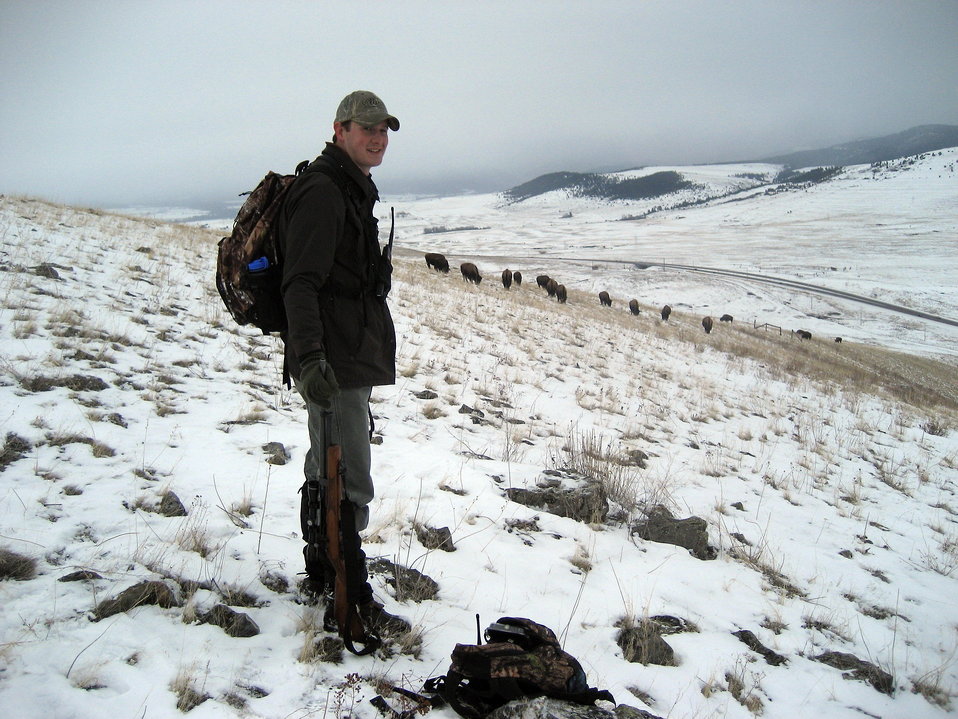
Bison Reproductive Study

Mike Borgreen prepares to paint mark bison via dart rifle and paint darts as part of sampling procedures for a bison reproductive study at the National Bison Range in Montana. Fecal samples were collected in the field and analyzed for pregnancy hormones.